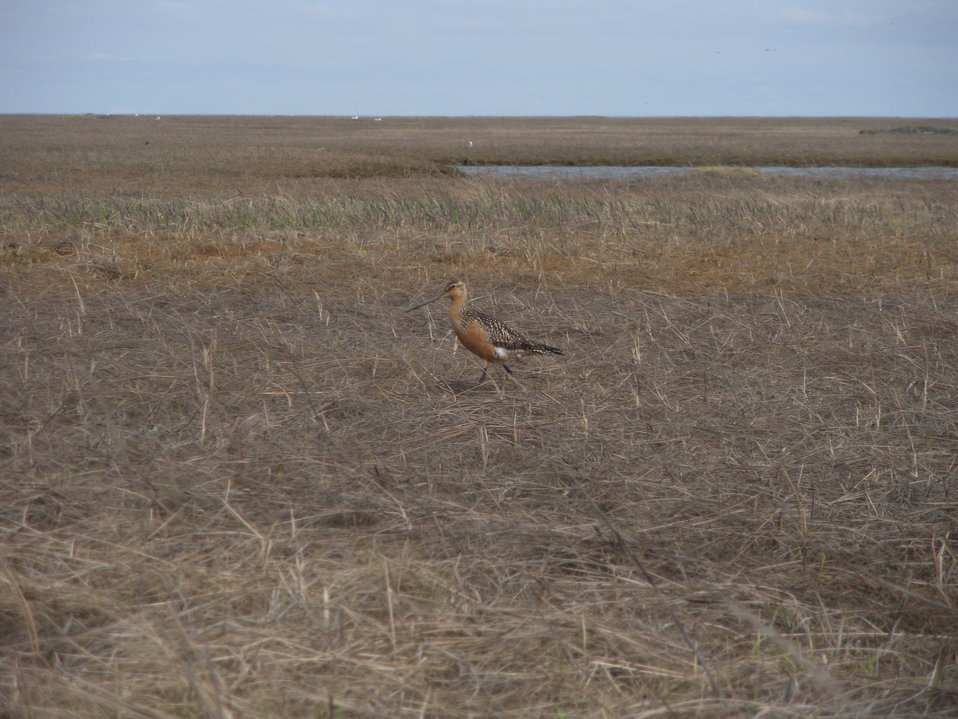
Male godwit

Yukon Delta NWR